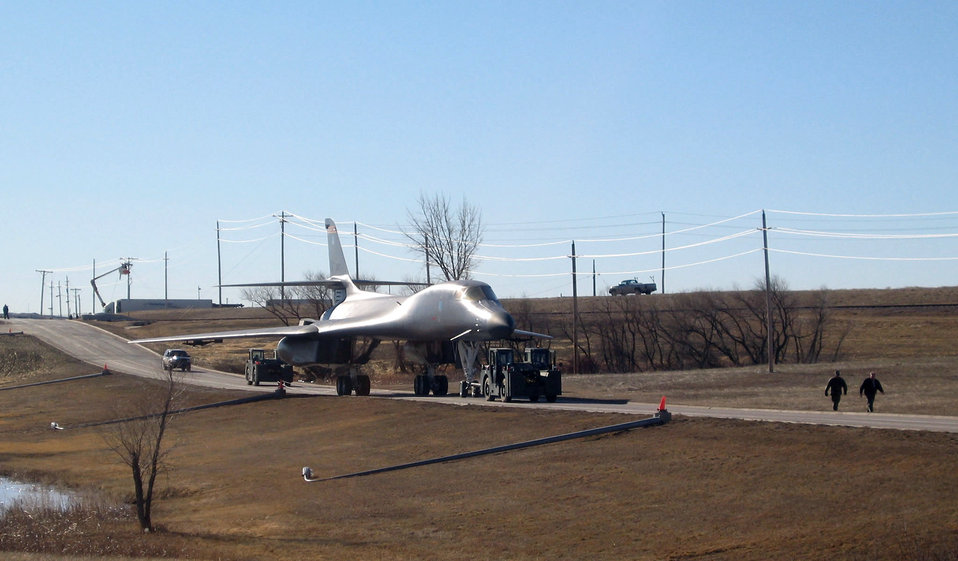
B-1 debuts at South Dakota museum

ELLSWORTH AIR FORCE BASE, S.D. -- Airmen move a B-1B Lancer is moved from the flightline here to the South Dakota Air and Space Museum for a permanent display.